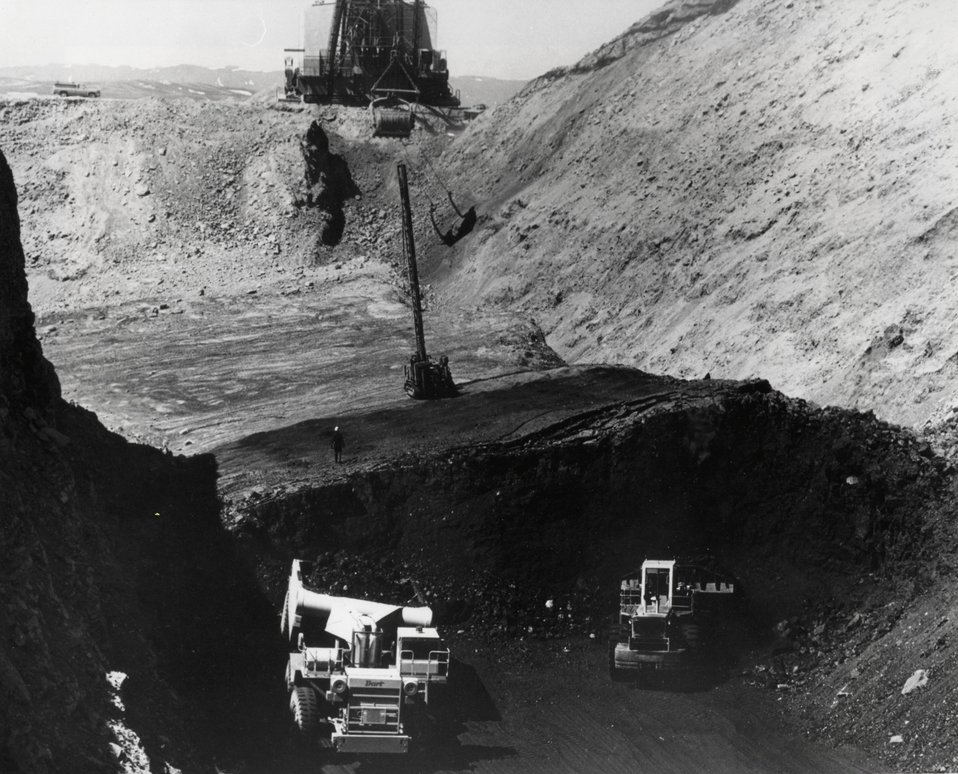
A thick seam of coal exposed by stripping done by the gig dragline, above, is being loaded into the Dart hauler by a front end loader at Arch Mineral Corporation Seminoe 2 mine is close neighbor to Rosebud Coal Sales. The two share the same rail spun for unit trains. c. 1976